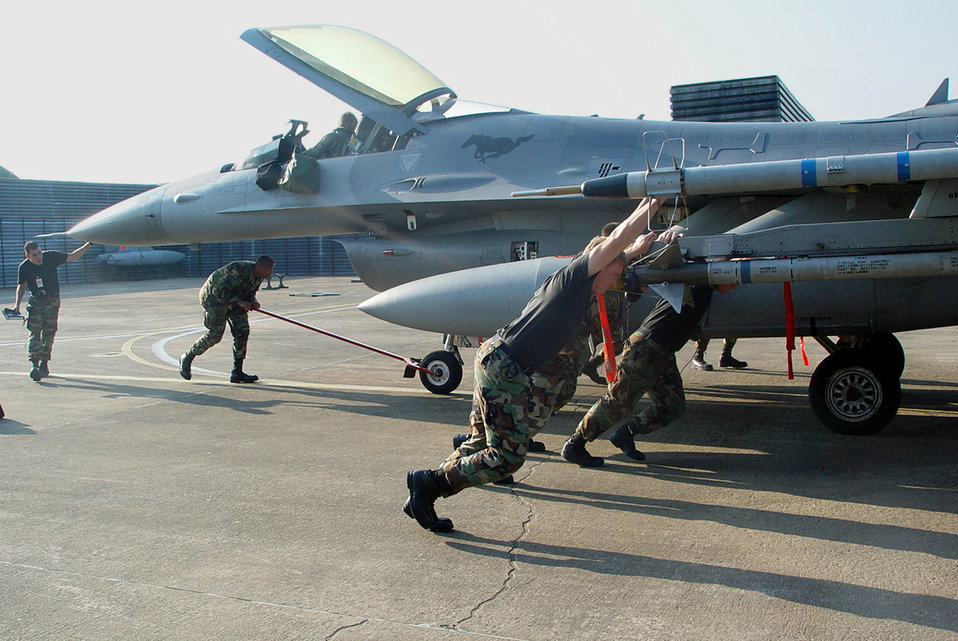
The mission continues

SUWON AIR BASE, South Korea - Airmen from the 51st Aircraft Maintenance Squadron push an F-16 Fighting Falcon into a revetment. The airmen are from Osan Air Base, South Korea, and are working here while Osan's runway is closed for repairs.